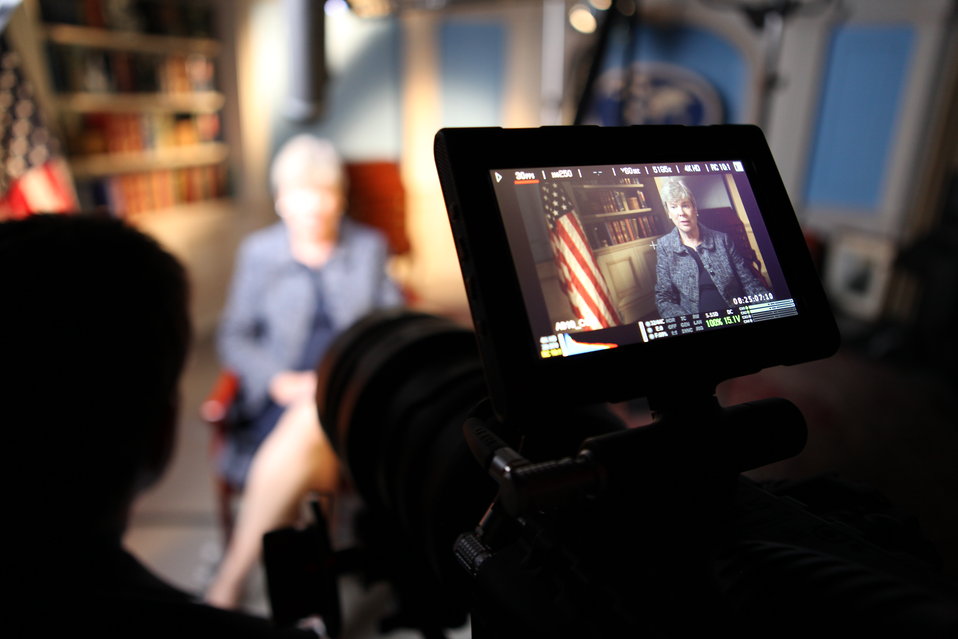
Acting Under Secretary Gottemoeller Participates in an Interview

Acting Under Secretary for Arms Control and International Security Rose Gottemoeller participates in an interview for a upcoming documentary at the U.S. Department of State in Washington, D.C., September 11, 2012.